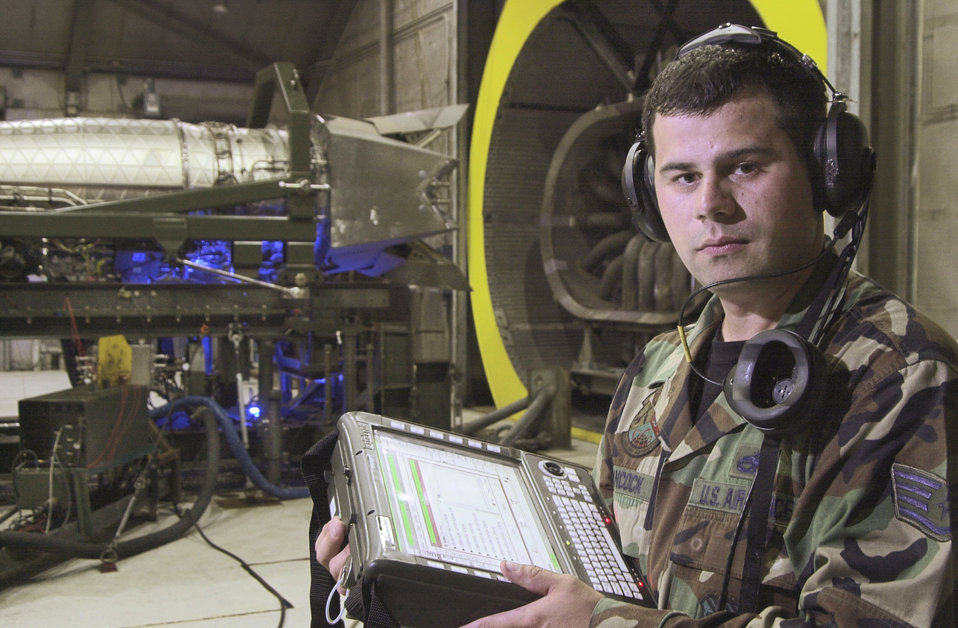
Maintaining the Raptor

LANGLEY AIR FORCE BASE, Va. -- Staff Sgt. William Hancock uses a portable maintenance aid in preparation of a nozzle vector test of an F/A-22 Raptor engine July 15. Airmen with the 1st Component Maintenance Squadron here are going through classes and training to certify them on the new engine.